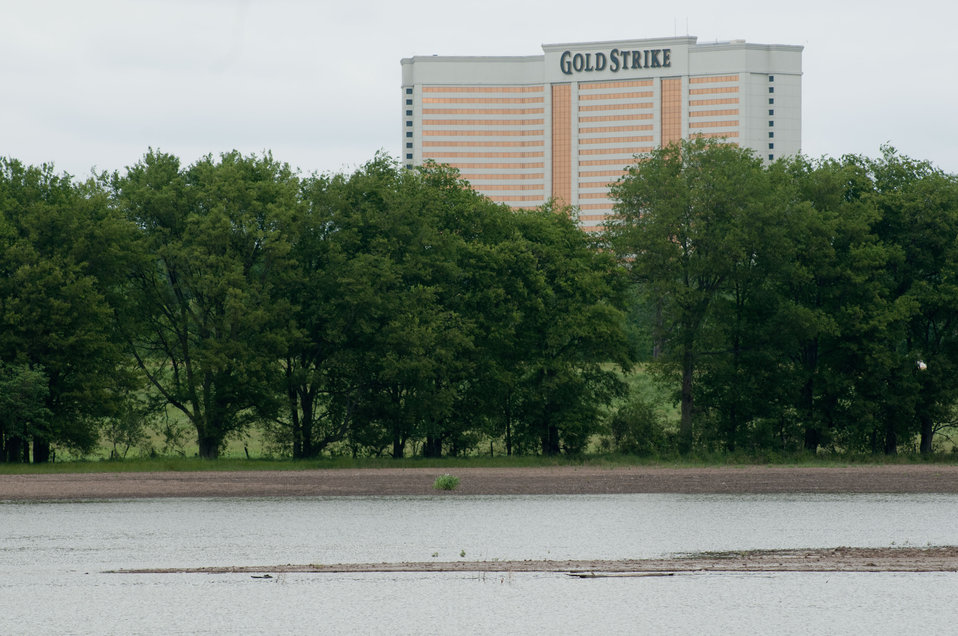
Floods waters from Mississippi River inundated casinos and farms that surround Tunica, MS, on Sunday, May 15. 2011.